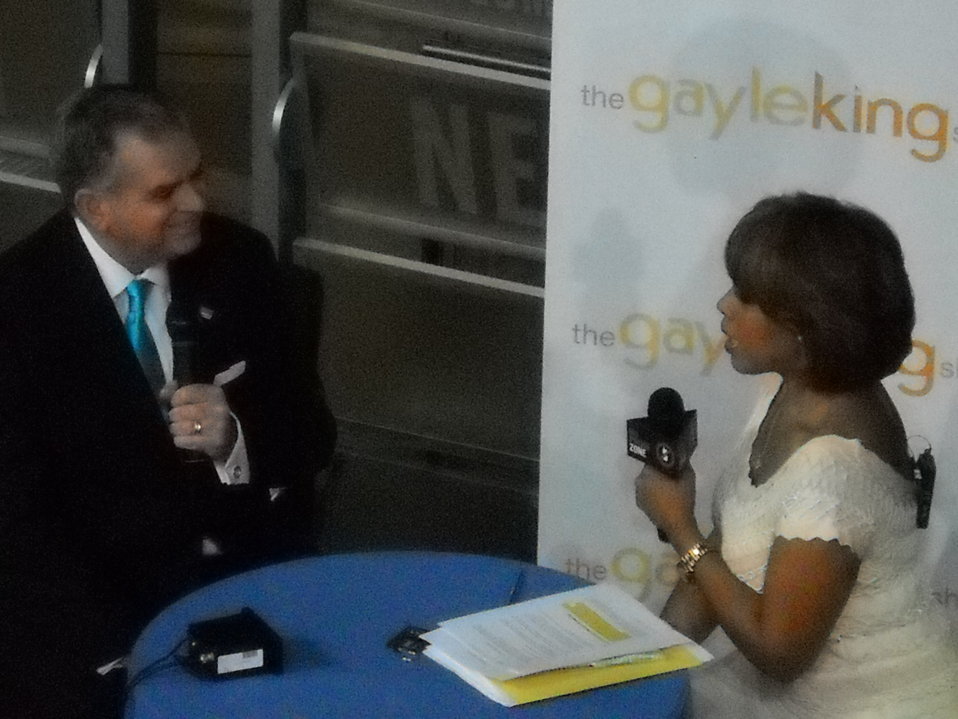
National No Phone Zone Day Newsum Washington, DC April 30, 2010 026